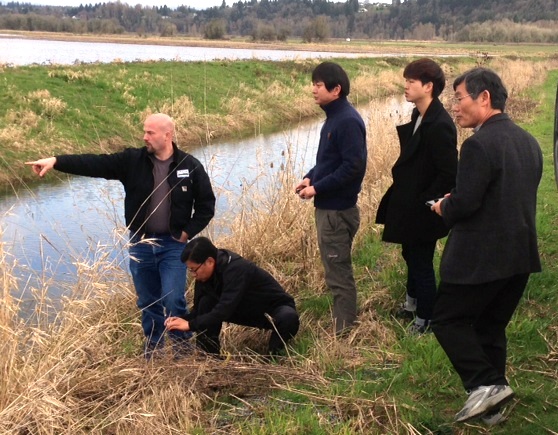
U.S. Department of Agriculture (USDA) Animal and Plant Health Inspection Service (APHIS) Wildlife Services (WS) District Supervisor Matt Cleland points out nutria in the distance while examining nutria damage close-up at Ridgefield National Wildlife Refuge (NWR) in Washington state.